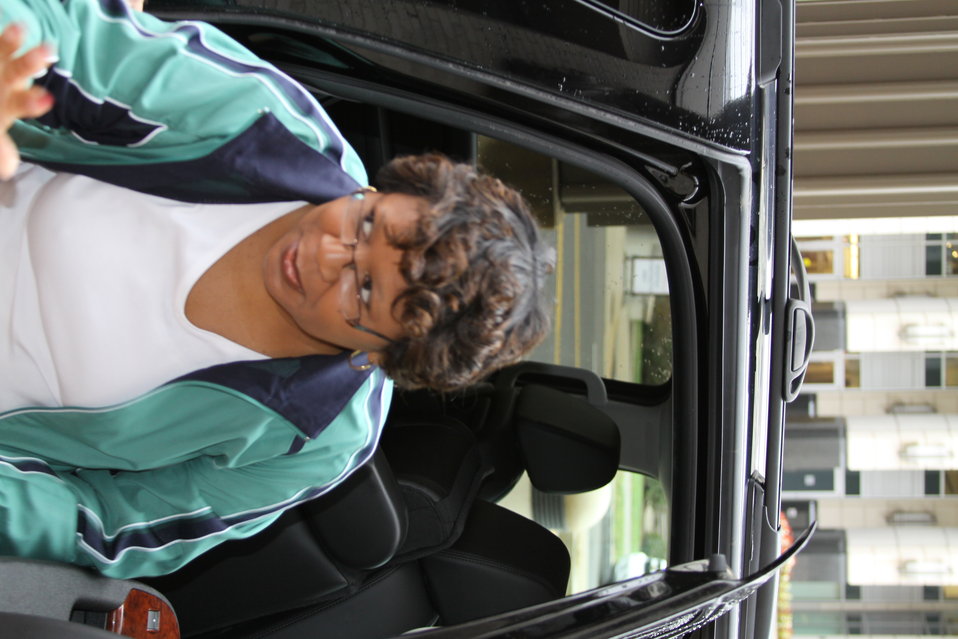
FCC Official Vehicle Tour